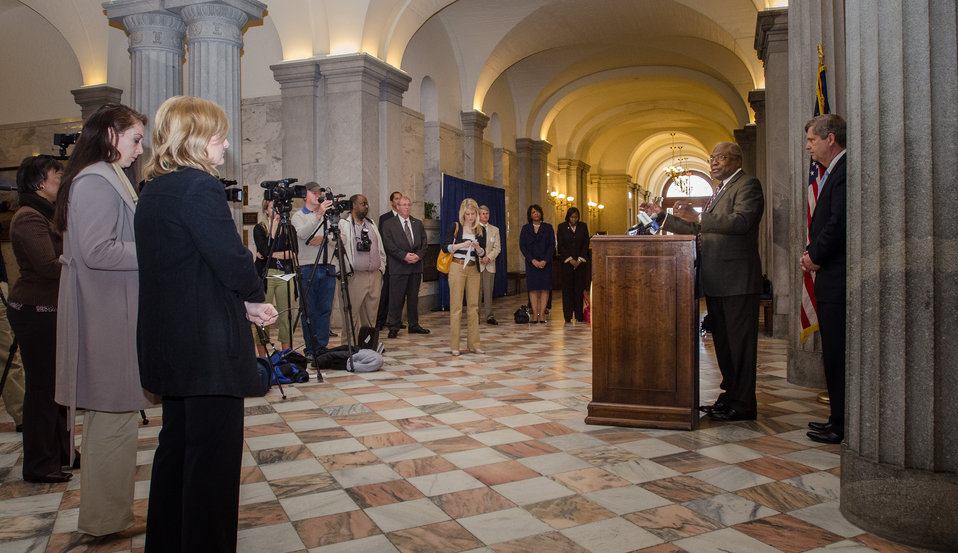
Agriculture Secretary Tom Vilsack (right) and South Carolina Congressman James E. Clyburn (podium) hold a press conference in the South Caroline State Capitol in Columbia, SC after the kick off of the Strike Force Initiative For Rural Growth and Opportunity at Voorhees College in Denmark, SC, on Tuesday, Mar. 26, 2013.